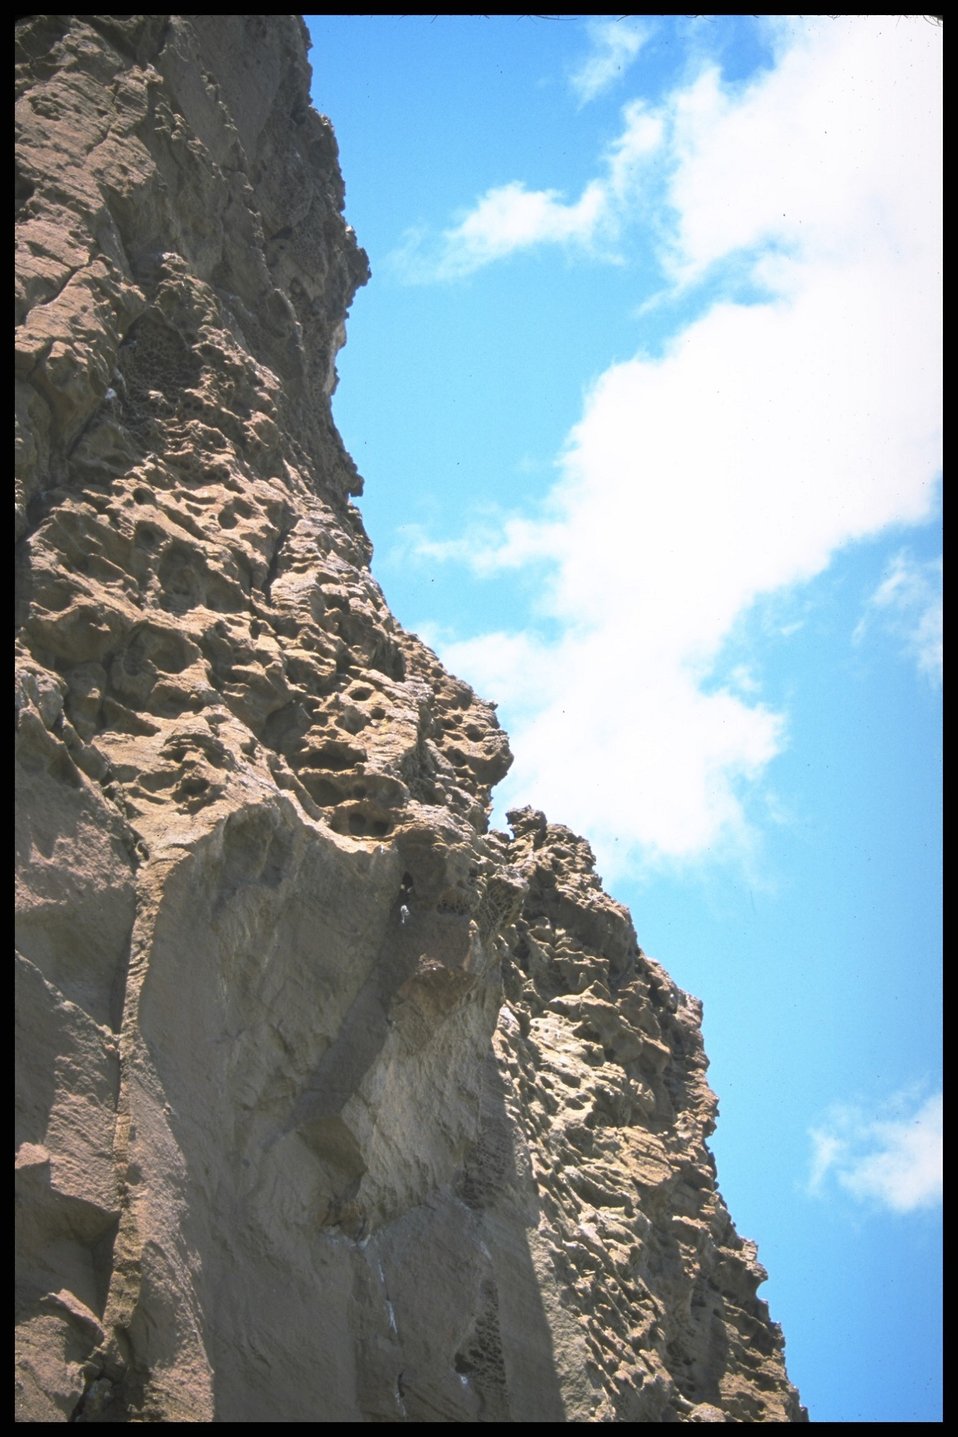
Scenic view of Ft. Rock, Lakeview District.